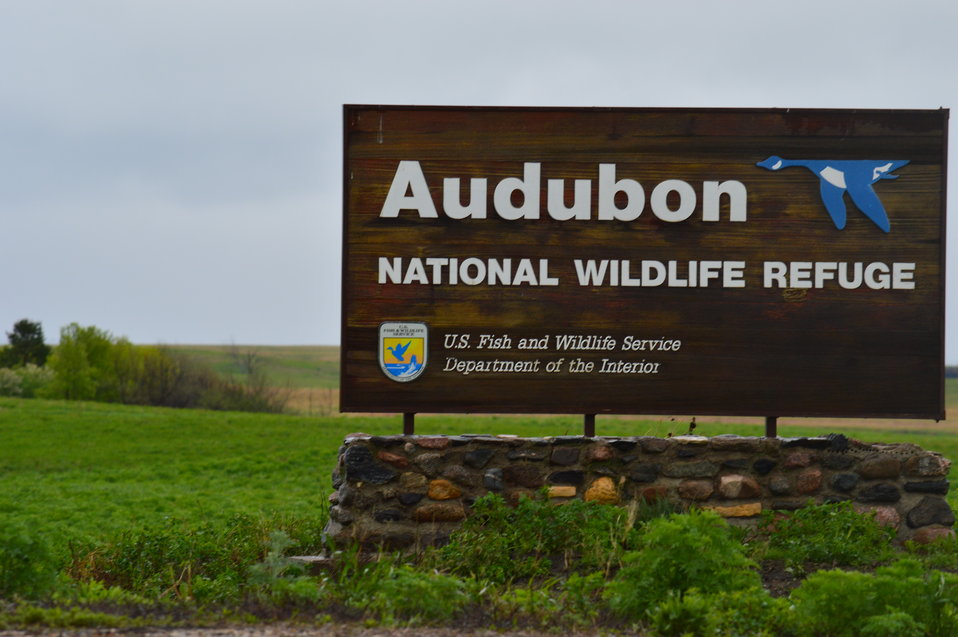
Audubon NWR sign

Scenery and wildlife and Audubon National Wildlife Refuge in North Dakota.